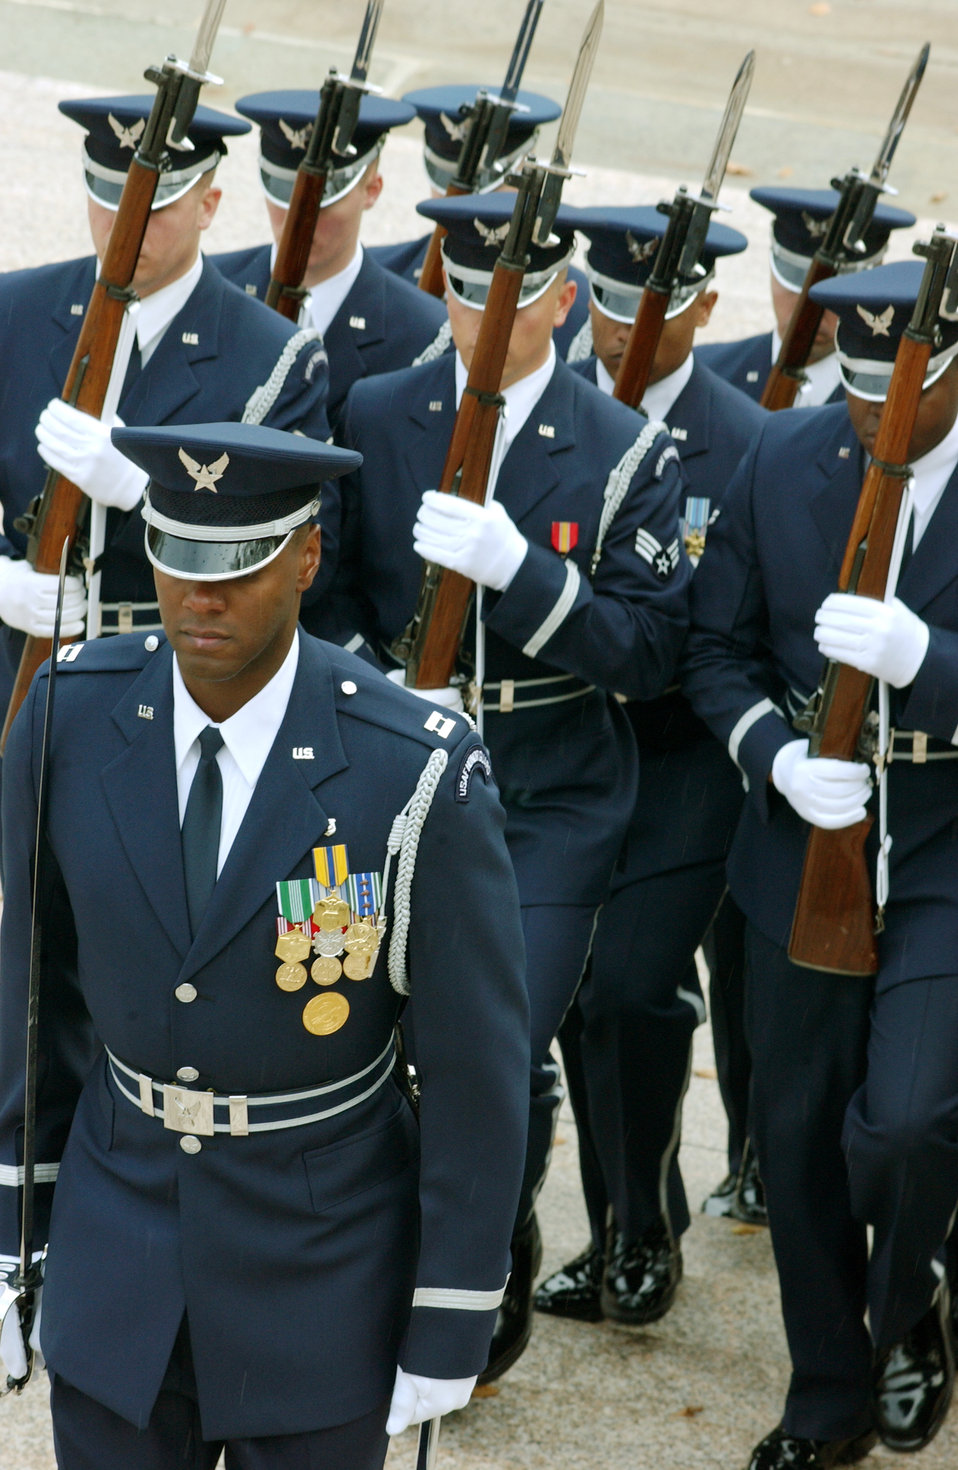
Veterans Day

ARLINGTON, Va. -- U.S. Air Force Honor Guard airmen march up the stairs to the Tomb of the Unknowns at Arlington National Cemetery on Nov. 11. The airmen participated in the Veterans Day wreath-laying ceremony.